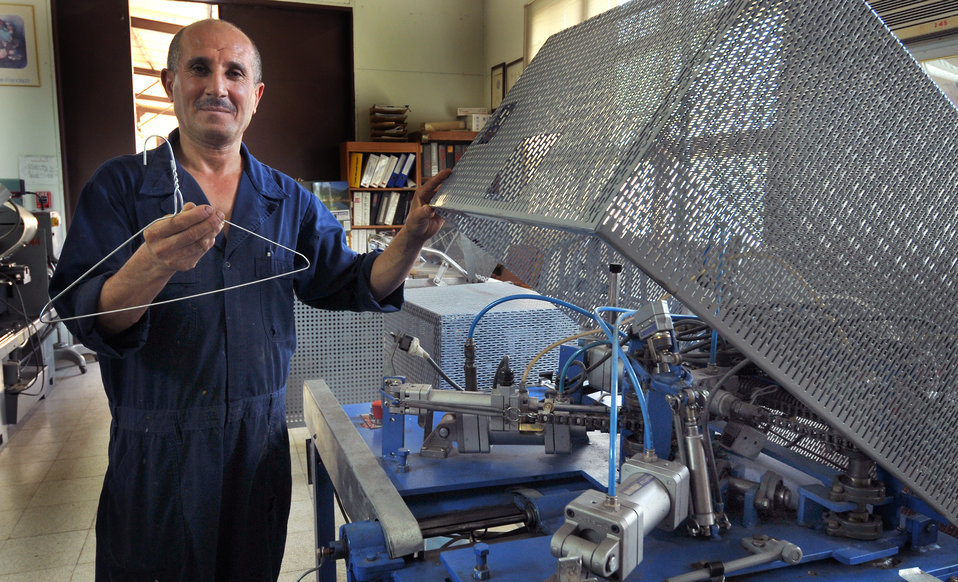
Incirlik Fabric Care Facility

Bedir Tanir stands by the hanger-making machine he created Sept. 21, 2010, at Incirlik Air Base, Turkey. This machine was created in order to cut costs and contributed to the $131,000 saved by the facility since 2000. Mr. Tanir is an Incirlik AB Fabric Care Facility mechanic.